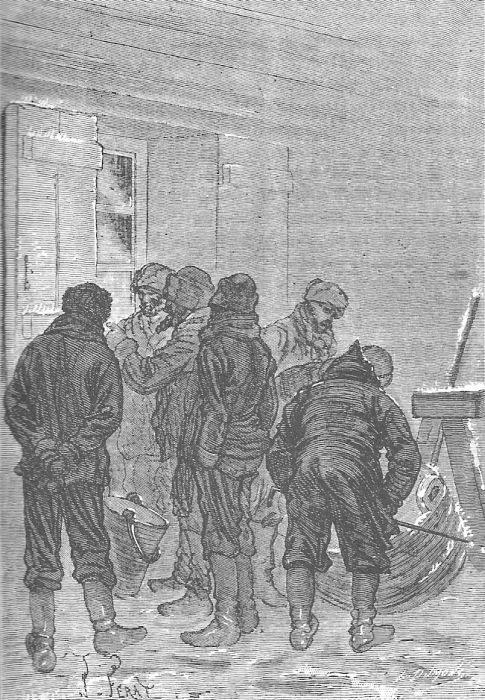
An illustration from Jules Verne's novel 'The Fur Country' (1871-72) drawn by Jules-Descartes Férat or Alfred Quesnay de Beaurepaire. Polski: Ilustracja powieści Juliusza Verne'a 'Wyspa błądząca' (także: 'W krainie białych niedźwiedzi', przekł. dosł.: 'Kraina futer'; 1871-72) autorstwa Julesa-Descartesa Férata lub Alfreda Quesnaya de Beaurepaire'a. Français : Jules Verne: 'Le Pays des fourrures' (1871-72), dessins par Jules-Descartes Férat ou Alfred Quesnay de Beaurepaire. Orginal description from the book: Français : « Ce n’est point un brouillard, c’est un « frost-rime. »